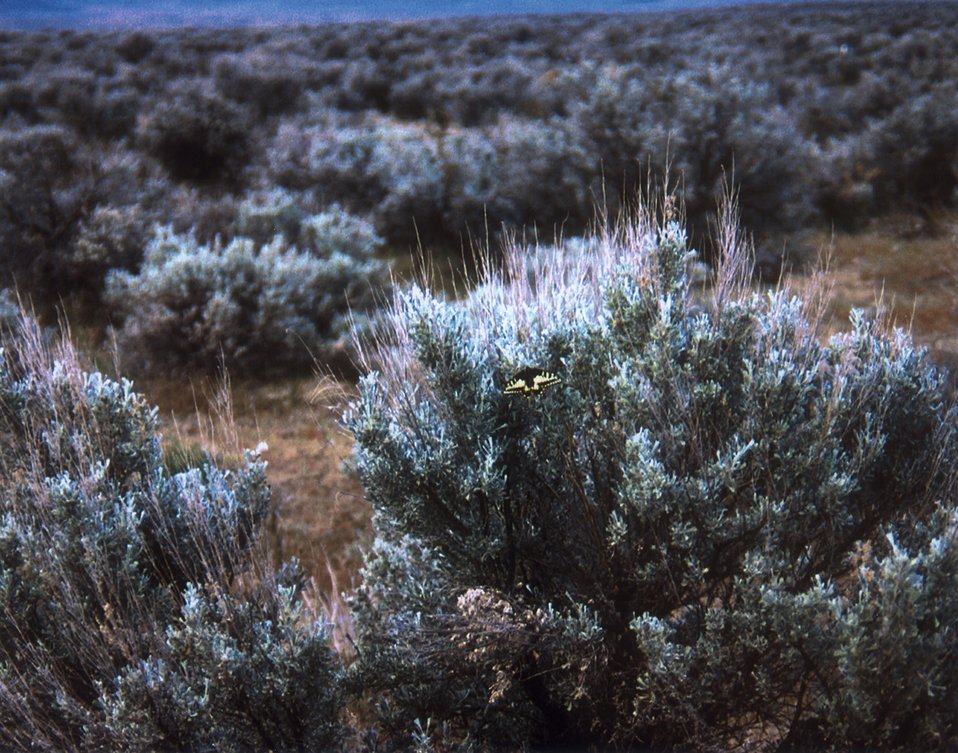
A butterfly is attracted to a field of sage-brush on the Hanford Site.